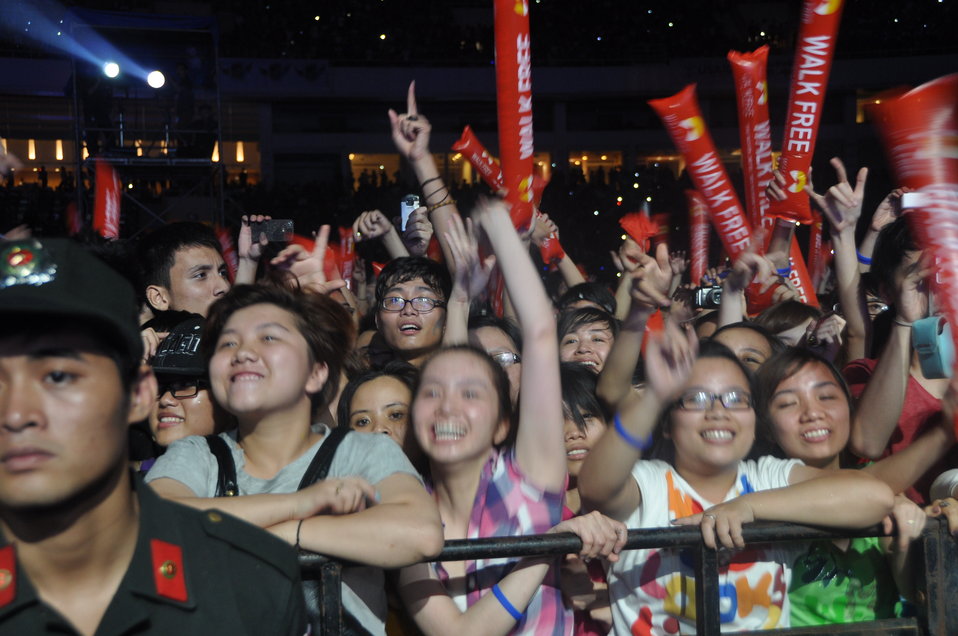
Crowds come out in huge numbers to My Dinh Stadium

USAID co-sponsors MTV EXIT concert, campaign against human trafficking